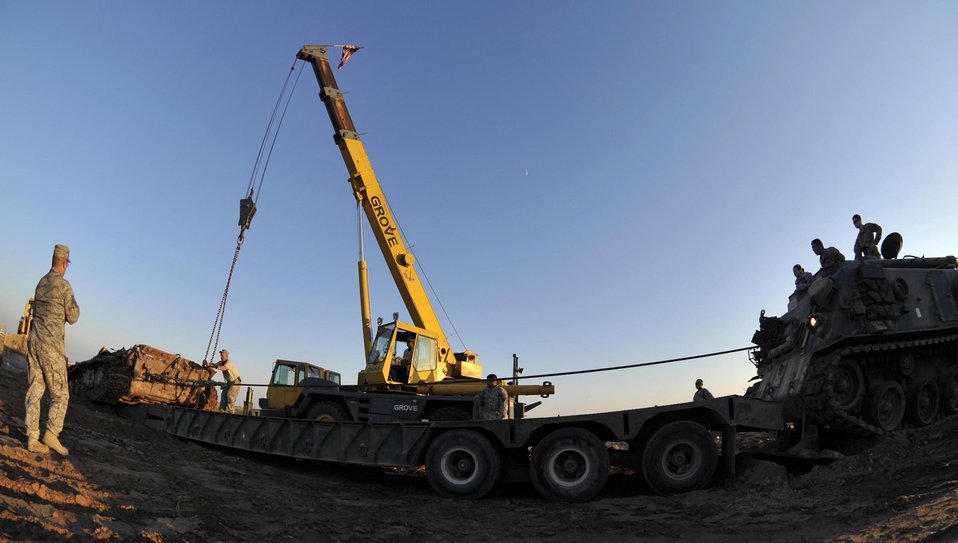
Sather Airmen clear away the debris of war, improve airport safety

Airmen from the 447th Expeditionary Civil Engineer Squadron and Soldiers from the 503rd Maintenance Company work together with an M-88 tank recovery vehicle, a bulldozer and a crane to lift, pull and push an Iraqi T-72 Main Battle Tank from its grave and onto a trailer on the airfield at Sather Air Base, Iraq. The tank was an obstruction to safe airfield operations and had to be removed.